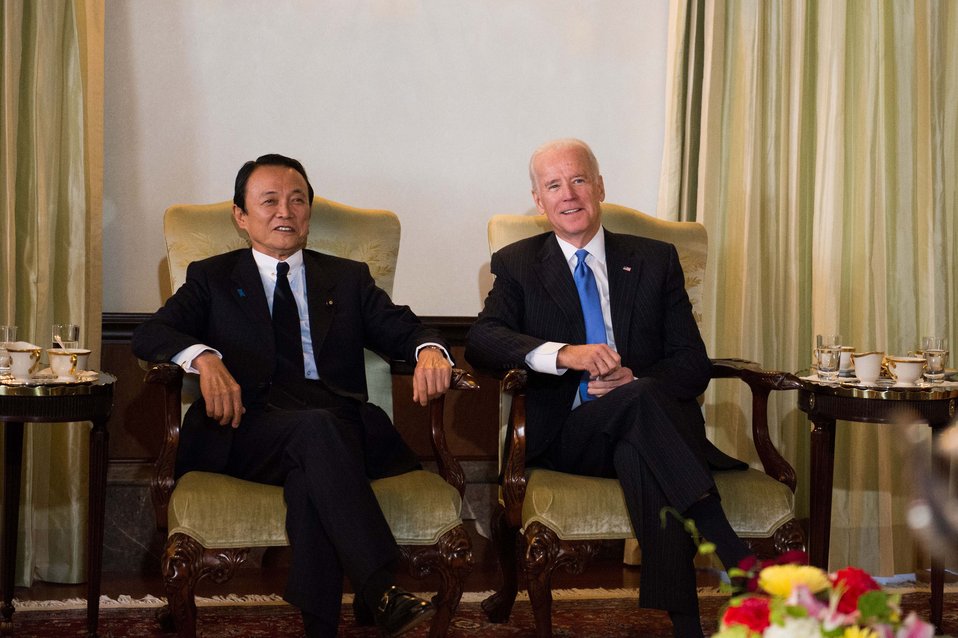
Vice President Biden Meets With Japanese Political Leaders

Vice President Joseph Biden, with U.S. Ambassador to Japan Caroline Kennedy and U.S. Assistant Secretary of State for East Asian and Pacific Affairs Daniel Russel, meets Japanese Deputy Prime Minister and Minister of Finance Taro Aso and other Diet Members including: from left, Chief Representative of the New Komeito Party Natsuo Yamaguchi, Secretary General of the Liberal Democratic Party (LDP) Shigeo Ishiba, and Chair of the Japan-U.S. Parliamentary Friendship League Hirofumi Nakasone, in Tokyo, Japan, on December 3, 2013.